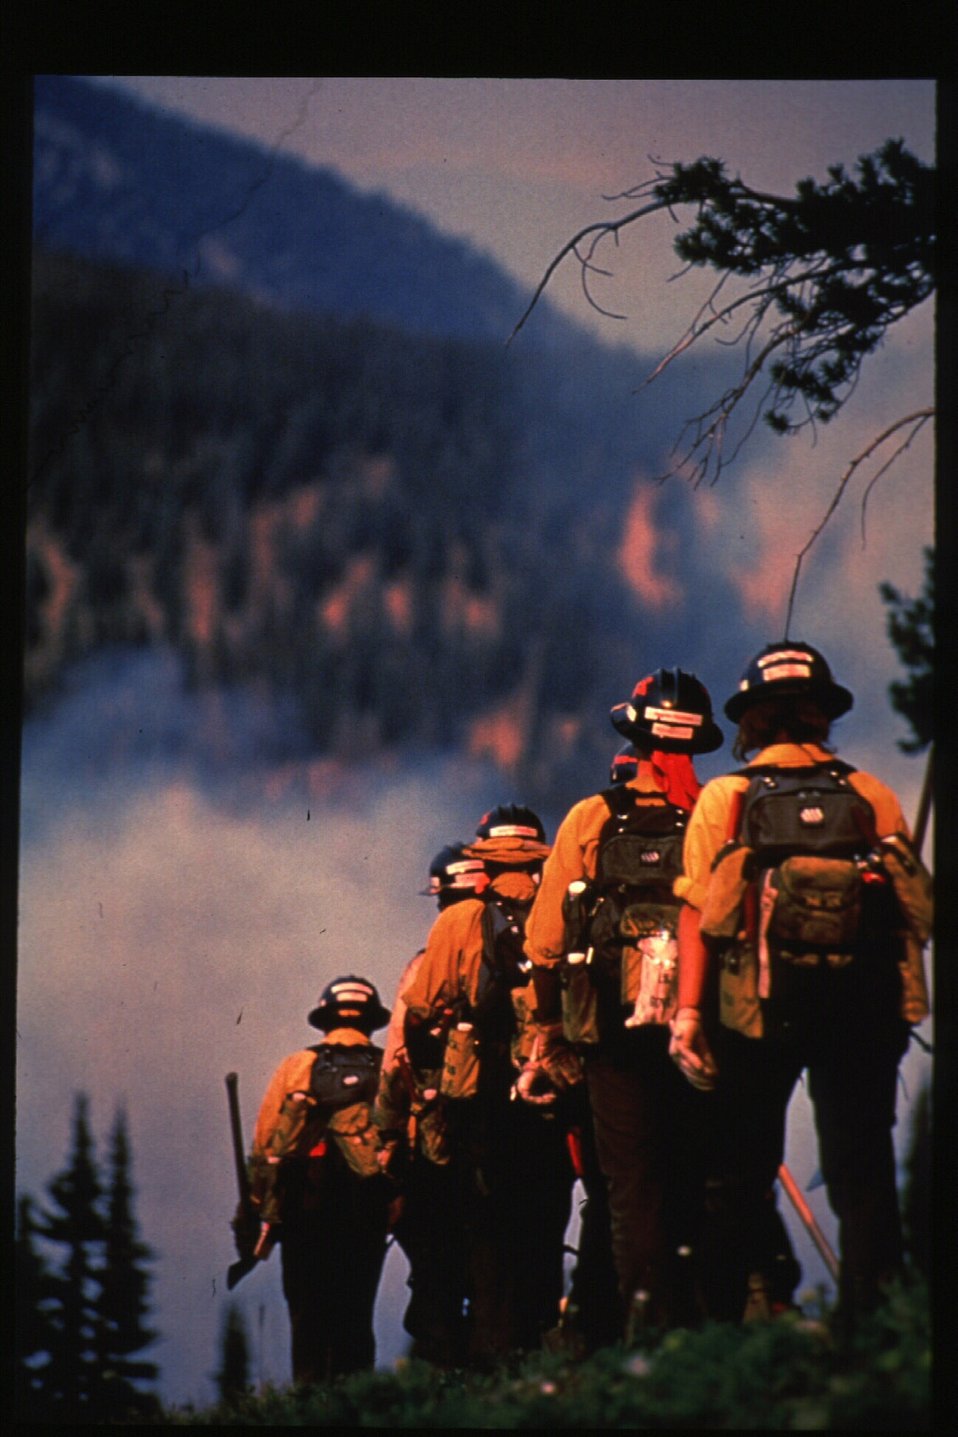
Boise Foothills Fire Danskin Mountains and South Fork of Boise River Wild Fire Fighters Four River Field Office LSRD Lower Snake River District